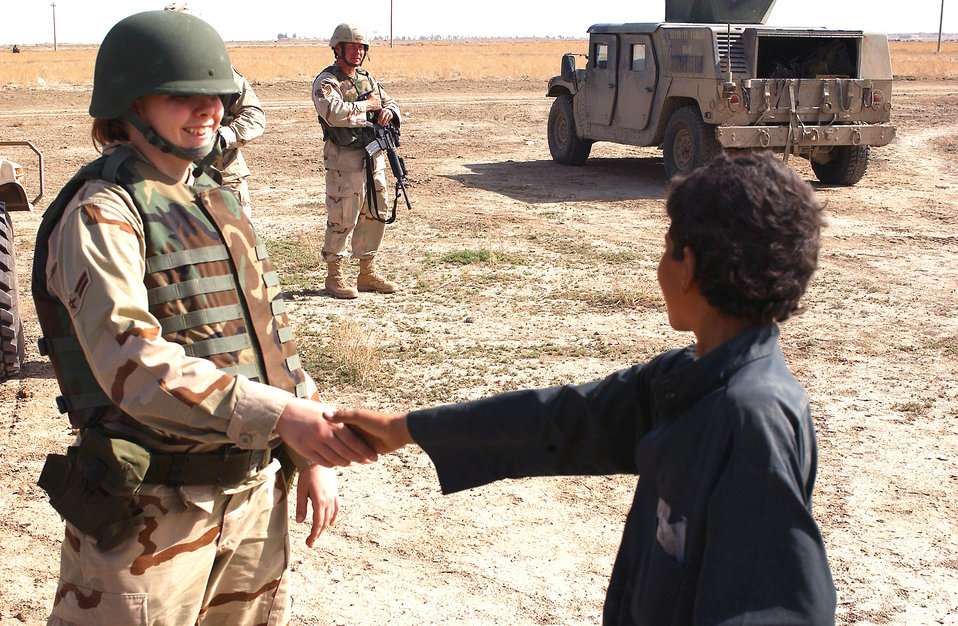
Airmen, Soldiers reach out to local Bedouins

NEAR TALLIL AIR BASE, Iraq -- Airman 1st Class Jessica Farley meets a child here during a visit to a Bedouin camp as part of an outreach program as Tech. Sgt. Richard Shinn provides security. Airman Farley is assigned to the 407th Expeditionary Services Squadron, and Sergeant Shinn is assigned to the 407th Security Forces Squadron.